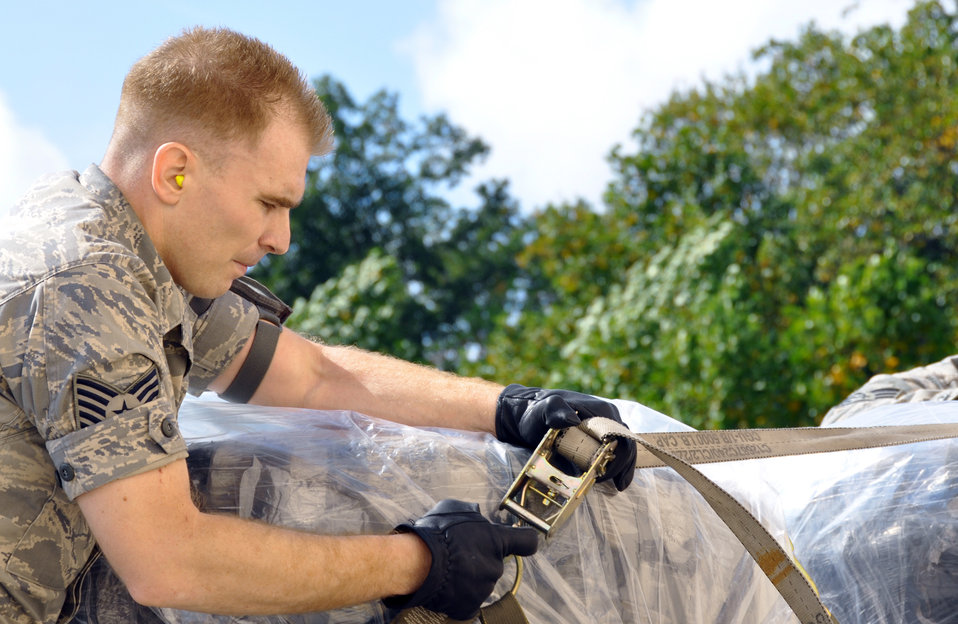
Port Dawg Challenge tests skills, strengthens camaraderie

Tech. Sgt. Charles Drinkwater secures a net strap across a stack of tires during the pallet-building event Oct. 26, 2010, during the Port Dawg Challenge at Dobbins Air Reserve Base, Ga. Sergeant Drinkwater is assigned to the 67th Aerial Port Squadron from Hill Air Force Base, Utah.